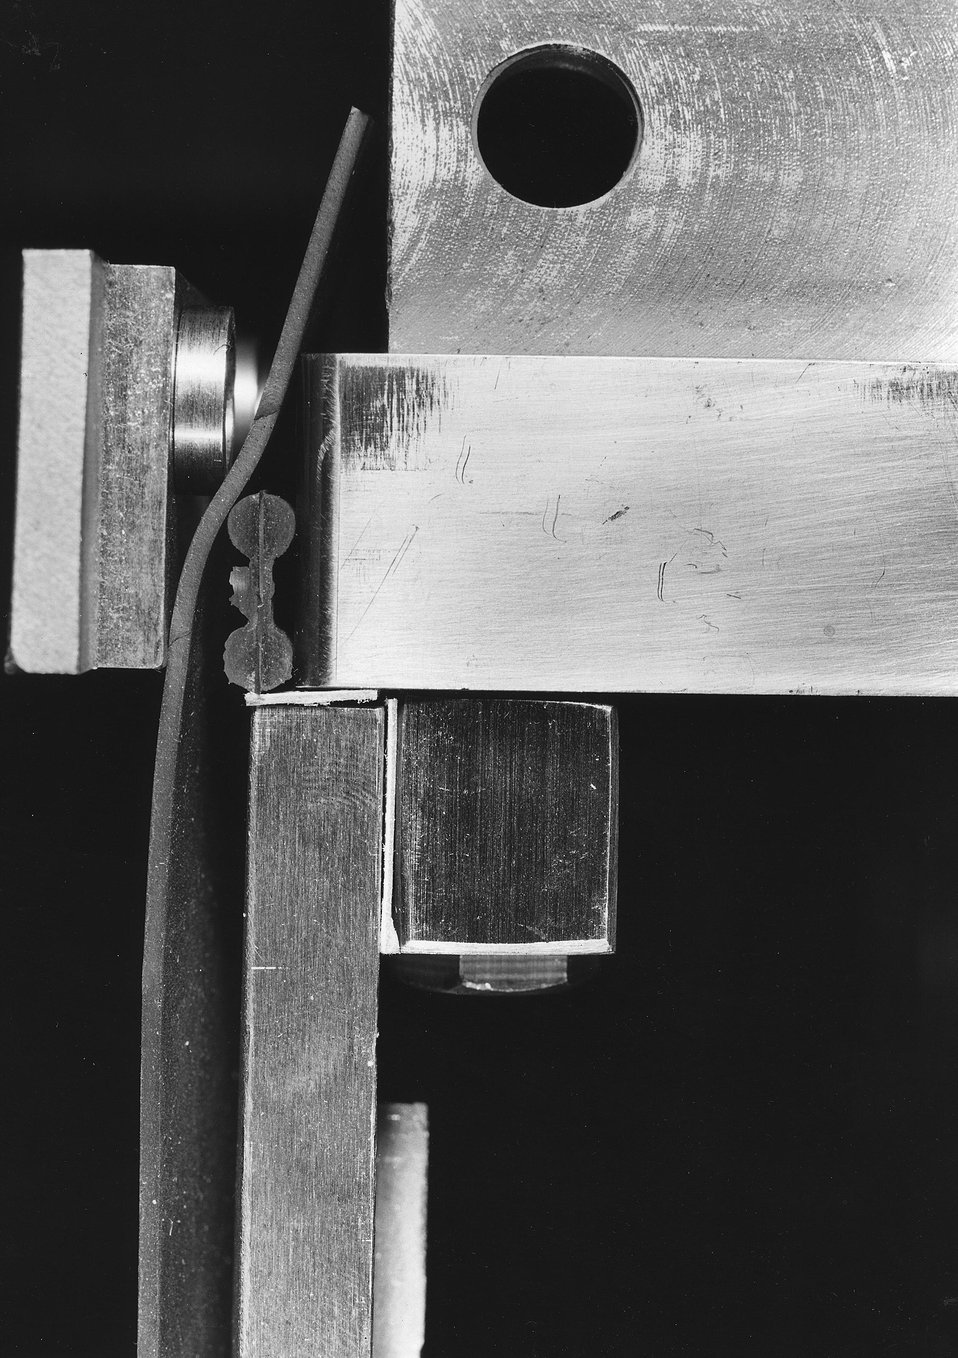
Detail of the assembly of the Cosmotron vacuum chamber showing Myvaseal blanket passing over dumbell gaskets and electrical isolation of adjacent metal pieces. c. 1951